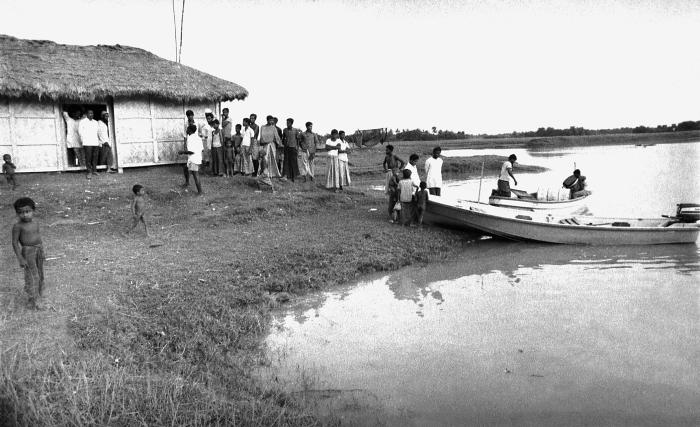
This was the activity seen outside the local smallpox office in this riverine Bangladesh town. Note the communications antennae that had been erected to facilitate communications between eradication team members. This image was part of a series provided by Dr. Stan Foster, and captured by Pierre Claquin, M.D., B.A.C., who at the time was a member of the World Health Organization's Smallpox Eradication Program. It was part of a series photographed by former E.I.S. officer, Stanley O. Foster M.D., M.P.H., and was one of a series entitled 'The Story of One Smallpox Jeep', which depicted the travails faced by the jeep, and its occupants of public health practitioners, as they road through the Bangladesh countryside in an attempt to eradicate smallpox from the country.